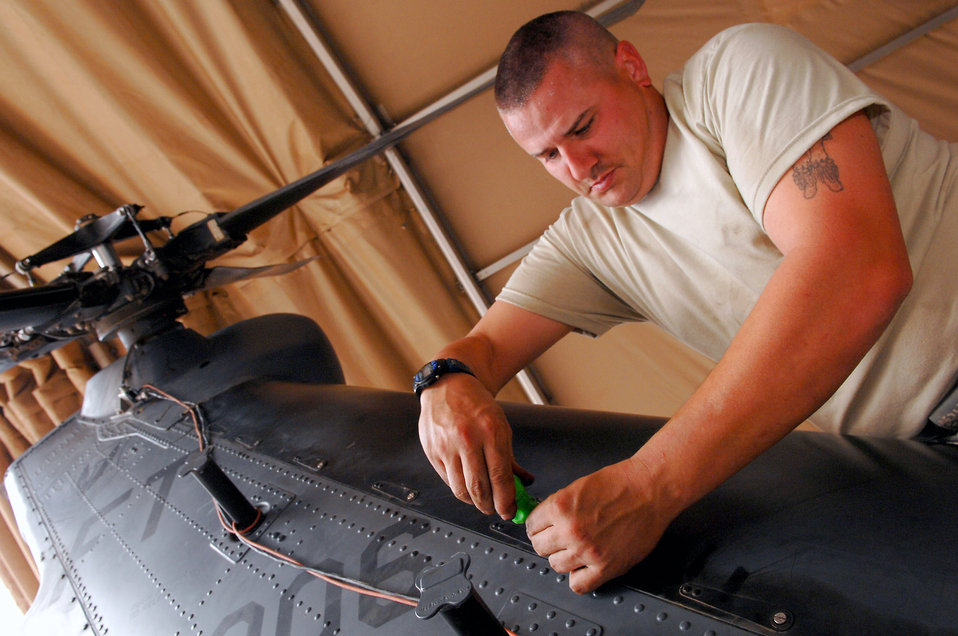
Helo maintenance

Staff Sgt. Tait Delzer tightens down the drive shaft cover of an HH-60 Pave Hawk helicopter March 12 at Balad Air Base, Iraq. Sergeant Delzer, a crew chief with the 64th Expeditionary Helicopter Maintenance Unit, performed an inspection on the aircraft after it had been flown 300 hours. During the inspection, all of the panels and covers were removed to facilitate preventative maintenance on the aircraft's systems and equipment. Sergeant Delzer is deployed from Moody Air Force Base, Ga.